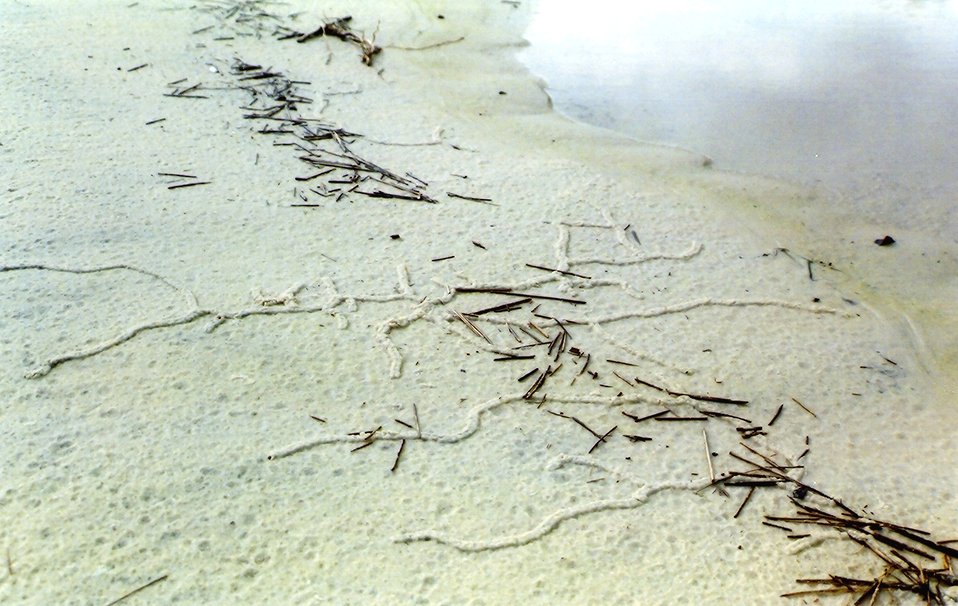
Pencil-sized tunnels caused by some type of burrowing animal caused a series of hieroglyphic appearing designs on the beach.